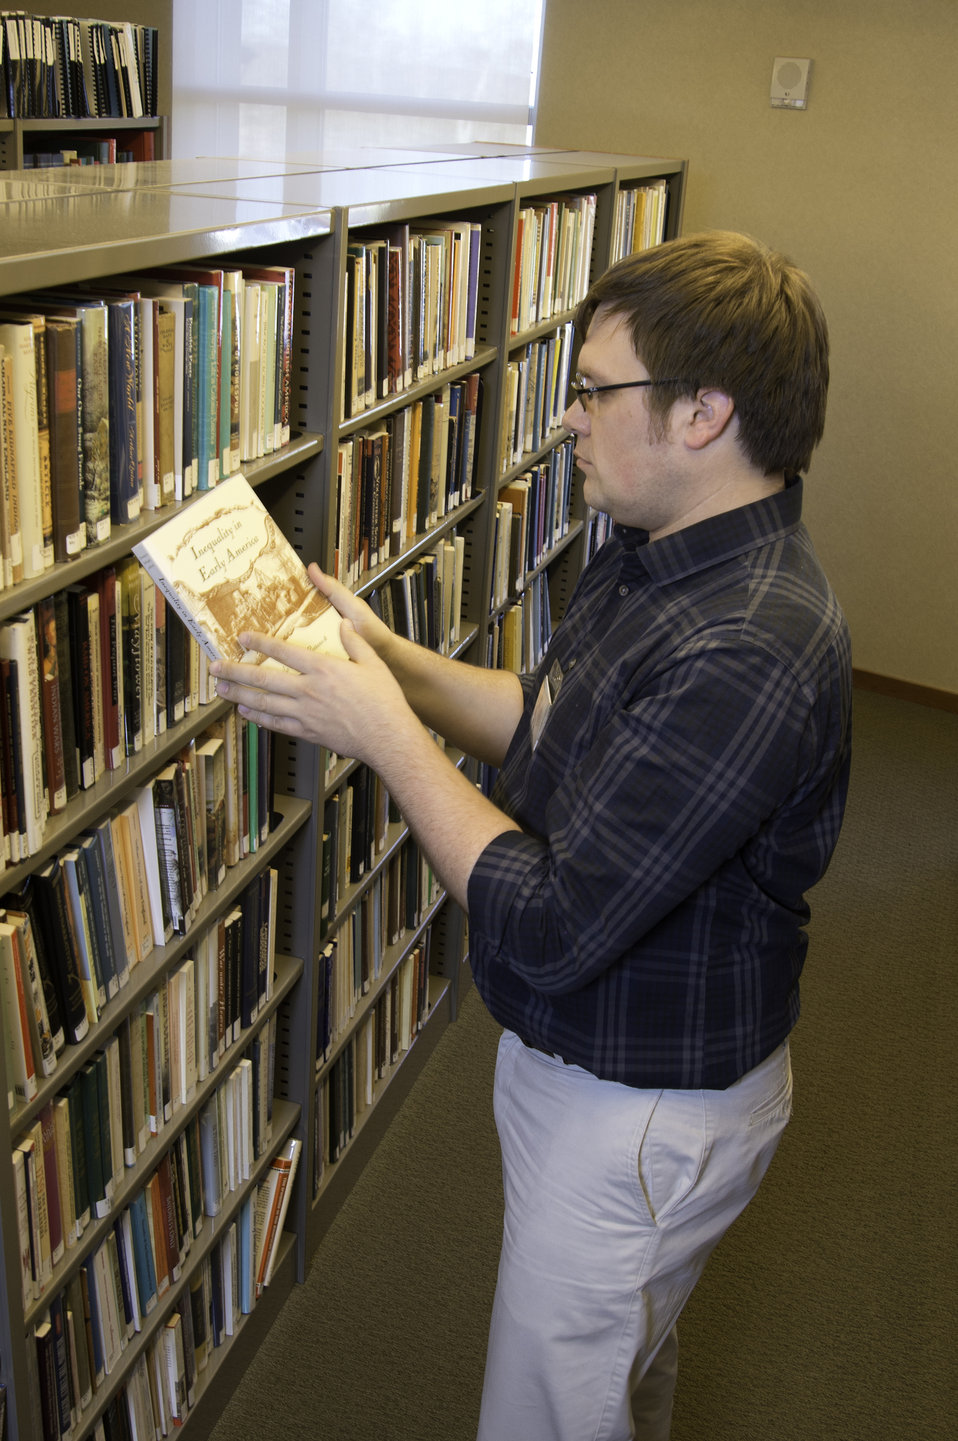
Librarian/Archivist for the Mohegan Tribe David Freeburg assists a Tribal member at the new Library and Archives located in the Mohegan Tribe Community Center and Government Building in Uncasville, CT on Nov. 18, 2013. A U.S. Department of Agriculture (USDA) Rural Development (RD) Community Facility Loan was provided to the Mohegan Tribe for the construction of the Mohegan Tribe Community Center and Government Building in Uncasville, CT. USDA’s RD Community Facilities Programs makes and guarantees loans to develop essential community facilities in rural areas and towns of up to 20,000 in population. Loans and guarantees are available to public entities such as municipalities, counties, parishes, boroughs, and special-purpose districts, as well as to non-profit corporations and tribal governments. The 160,000 square foot building Center hosts an exhibit celebrating federal recognition, history of Mohegan Chiefs, a new Library and Archives space, new Arts and Crafts room, a new gymnasium, and a new community room to enjoy food and family. The Center will continue the Tribe’s plan for growth and meeting the needs of its members.